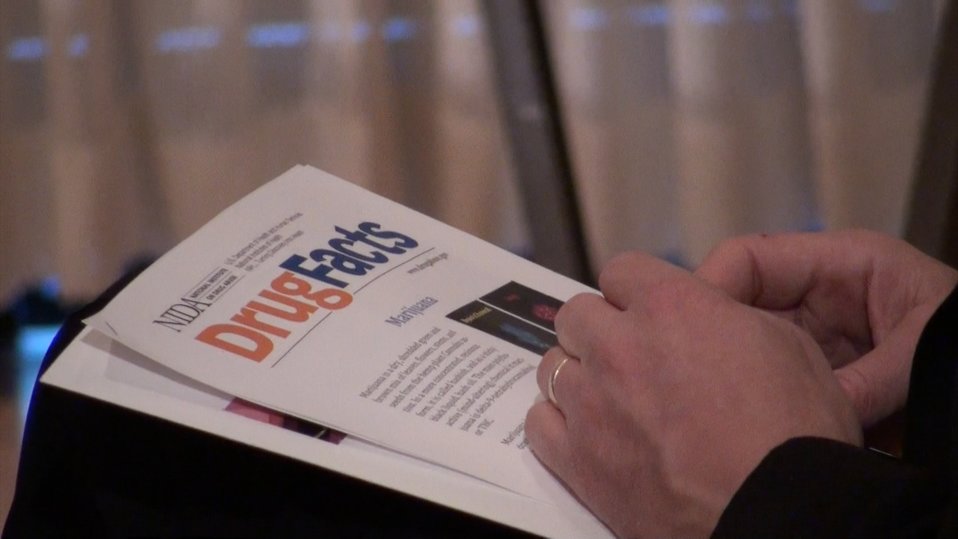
NIDA publication